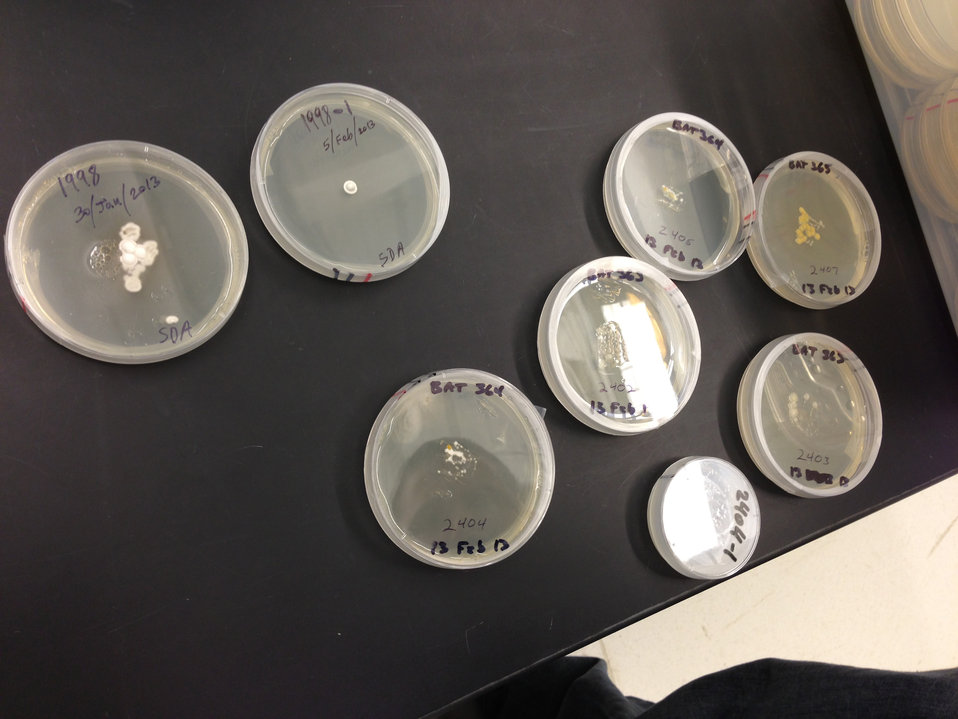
Lab cultures of Geomyces destructans

Laboratory cultures of Geomyces destructans (2 petri dishes in upper left) and other organisms in the laboratory of Dr. Andrew Miller, Mycologist at the Illinois Natural History Survey (University of Illinois).